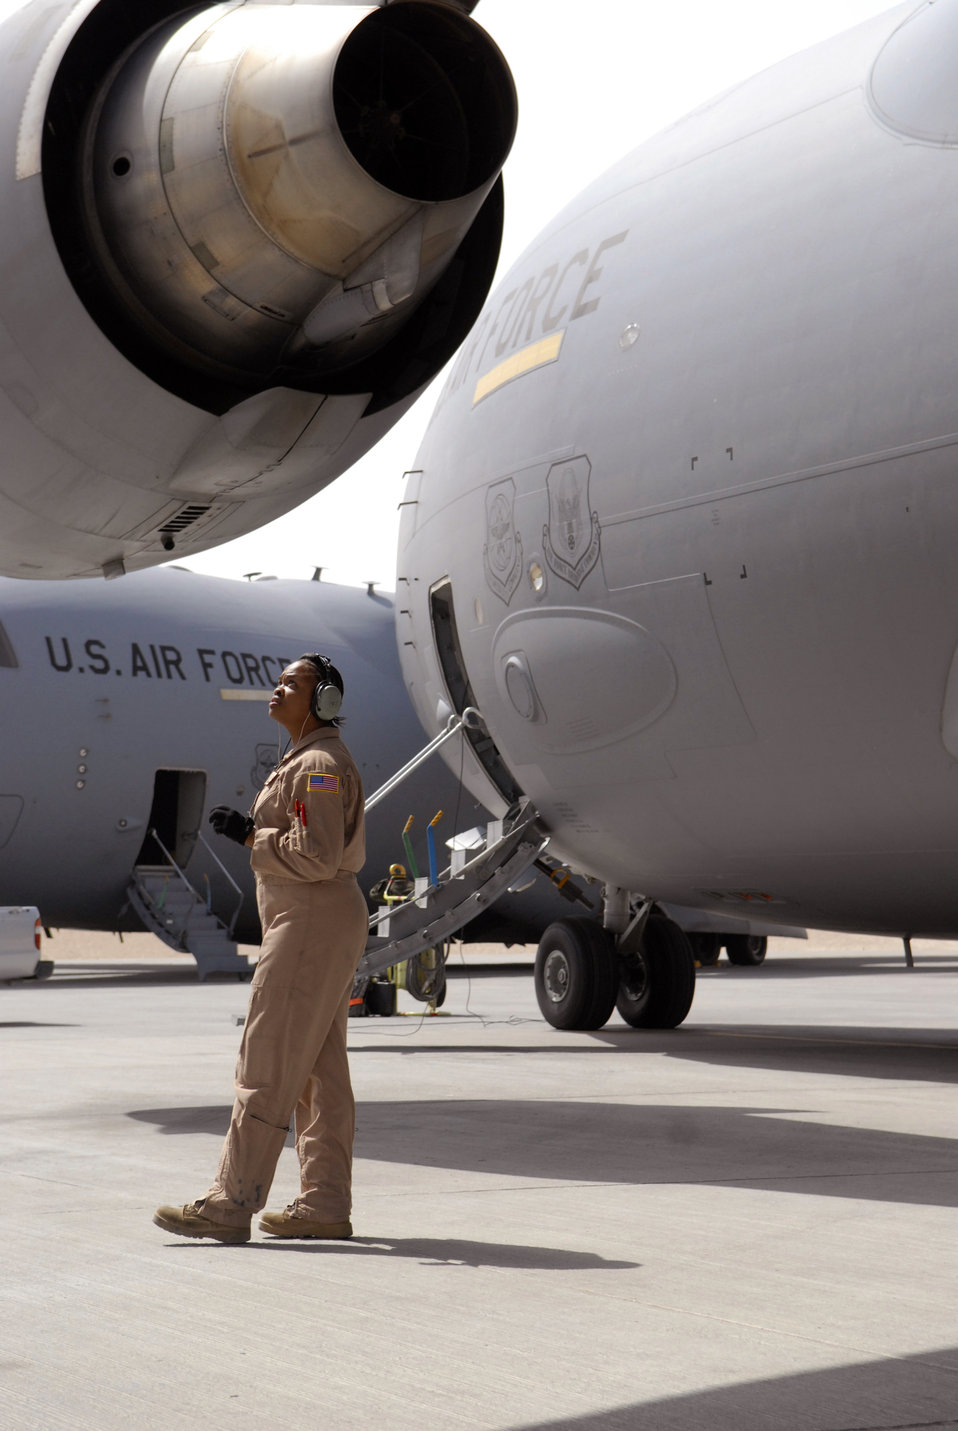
Women's History Month: All-female crew supports warfighters

Staff Sgt. Krysteena Scales performs preflight checks before departing on a mission in a C-17 Globemaster III March 19 at an air base in Southwest Asia. She was part of an all-female flight crew. Sergeant Scales is a 816th Expeditionary Airlift Squadron flying crew chief from Flint, Mich., and is deployed from Charleston Air Force Base, S.C.